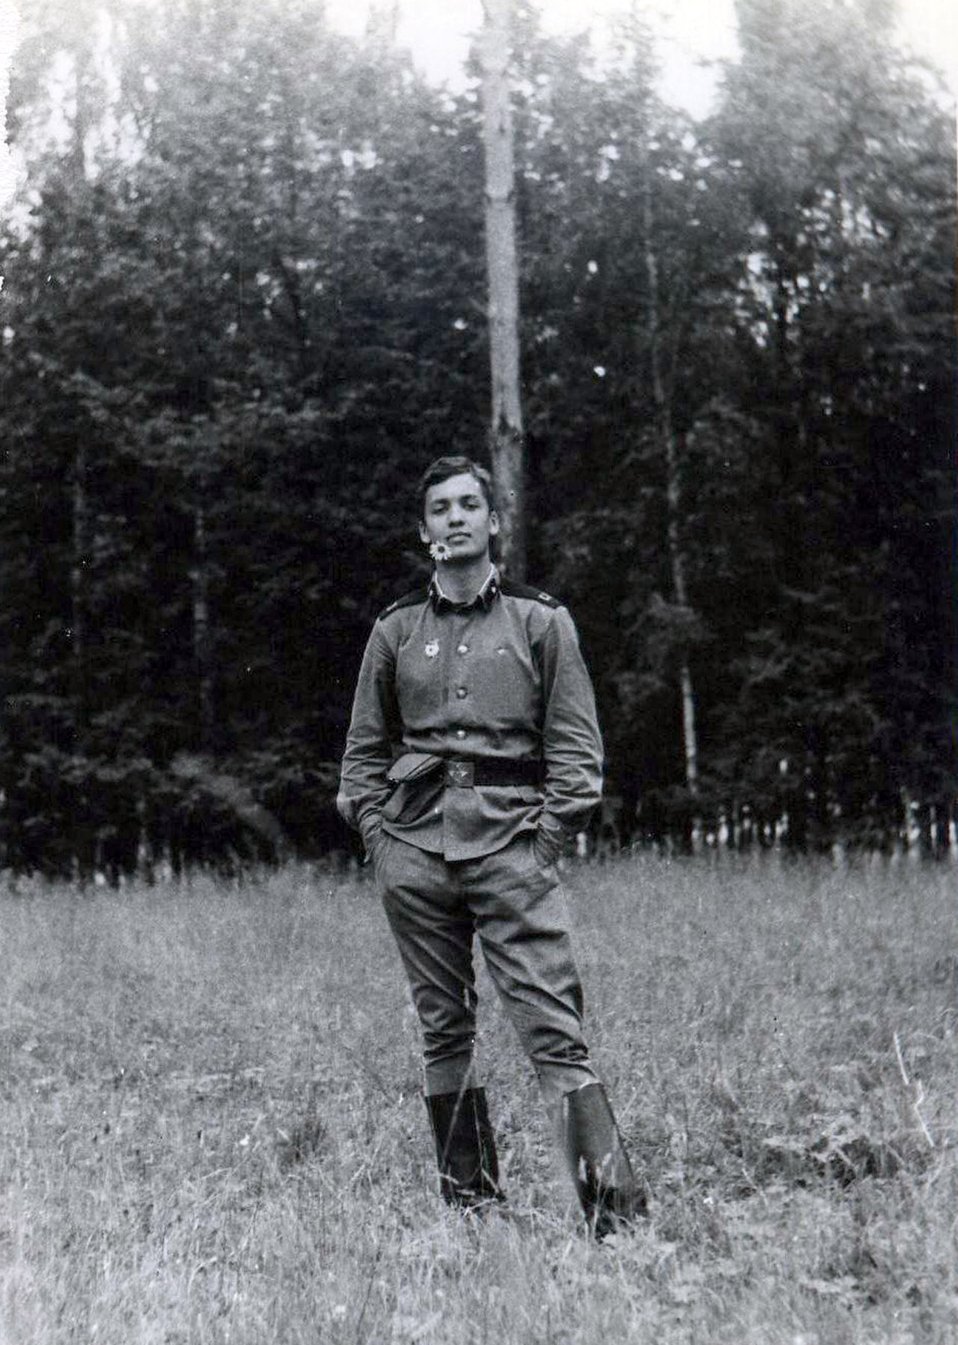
From Russian tanks to Air Force trombones

U.S. Air Force Band of the Pacific-Asia trombone player Staff Sgt. Vladimir Tchekan is pictured here when he was in the Soviet Union military from 1984 to 1986 in the Kantemirovsky Tank Division.